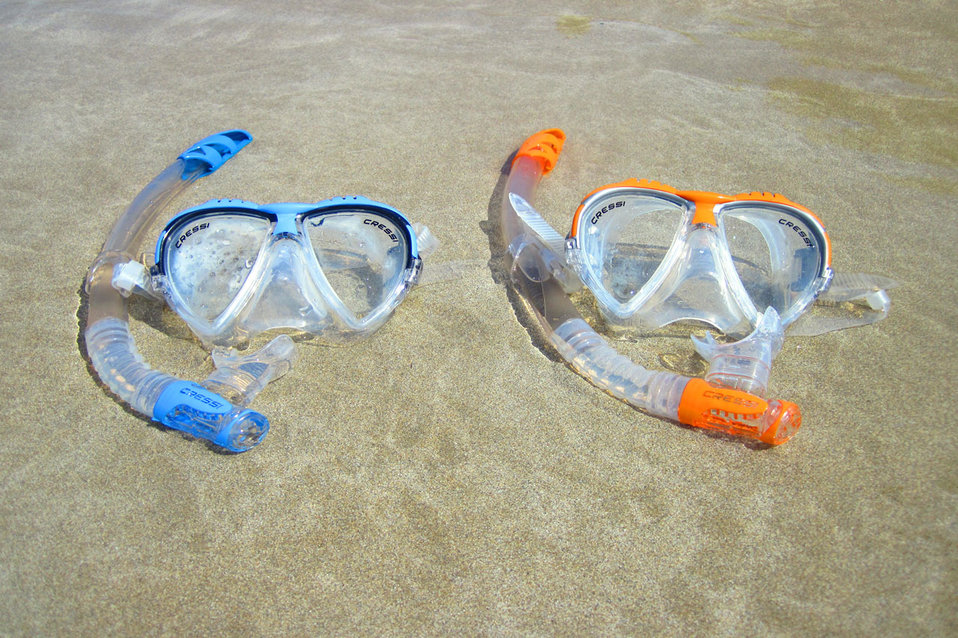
Snorkeling goggles

Two snorkeling goggles on beach.